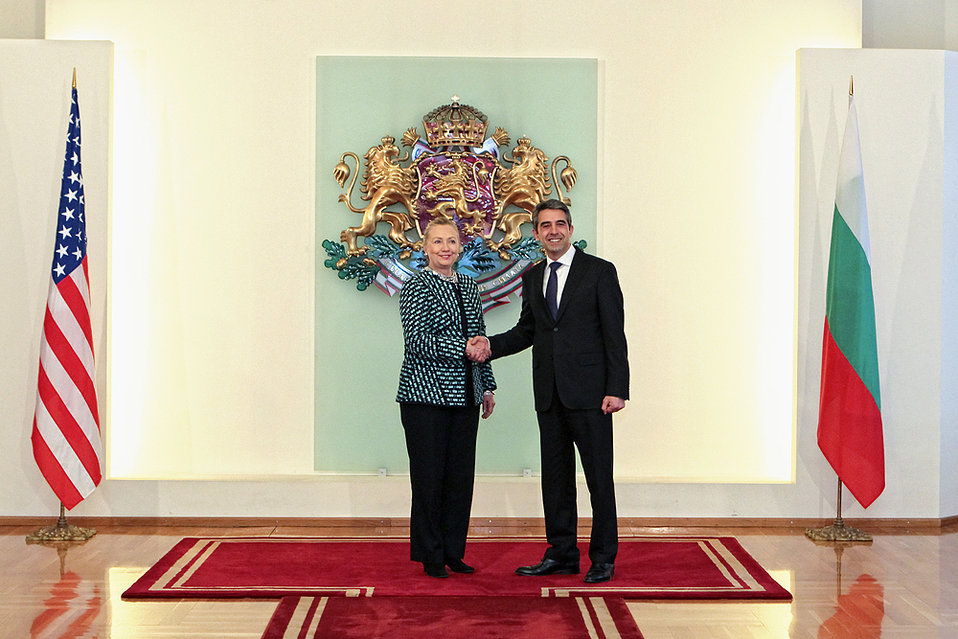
Secretary Clinton Shakes Hands With Bulgarian President Plevneliev

U.S. Secretary of State Hillary Rodham Clinton shakes hands with Bulgarian President Rosen Plevneliev in the Coat of Arms Hall at the Bulgarian Presidency building in Sofia, Bulgaria, on February 5, 2012.